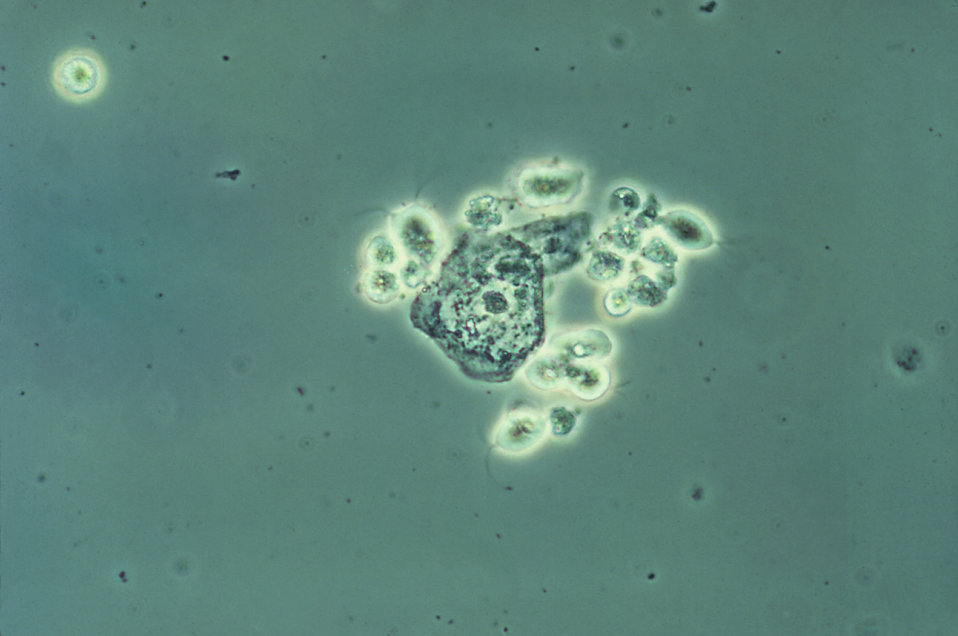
This phase contrast wet mount micrograph of a vaginal discharge revealed the presence of Trichomonas vaginalis protozoa.